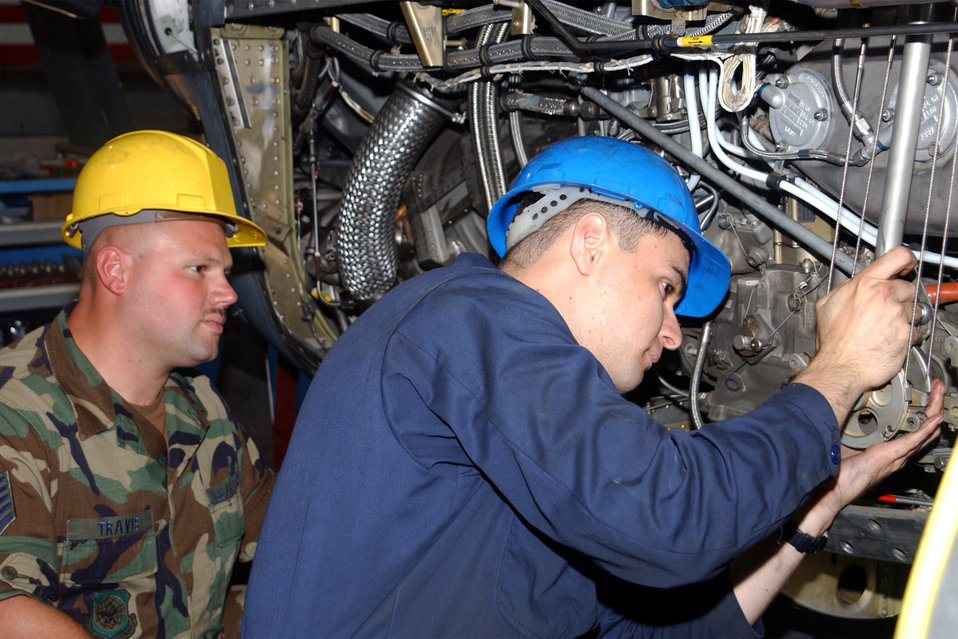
Isochronal inspection

RAMSTEIN AIR BASE, Germany -- Tech. Sgt. Stephen Travis works with Senior Airman Frank Belltran on an engine during the isochronal inspection. Travis is from the Kentucky Air National Guard's 123rd Airlift Wing, and Belltran is from the 86th Airlift Wing here.